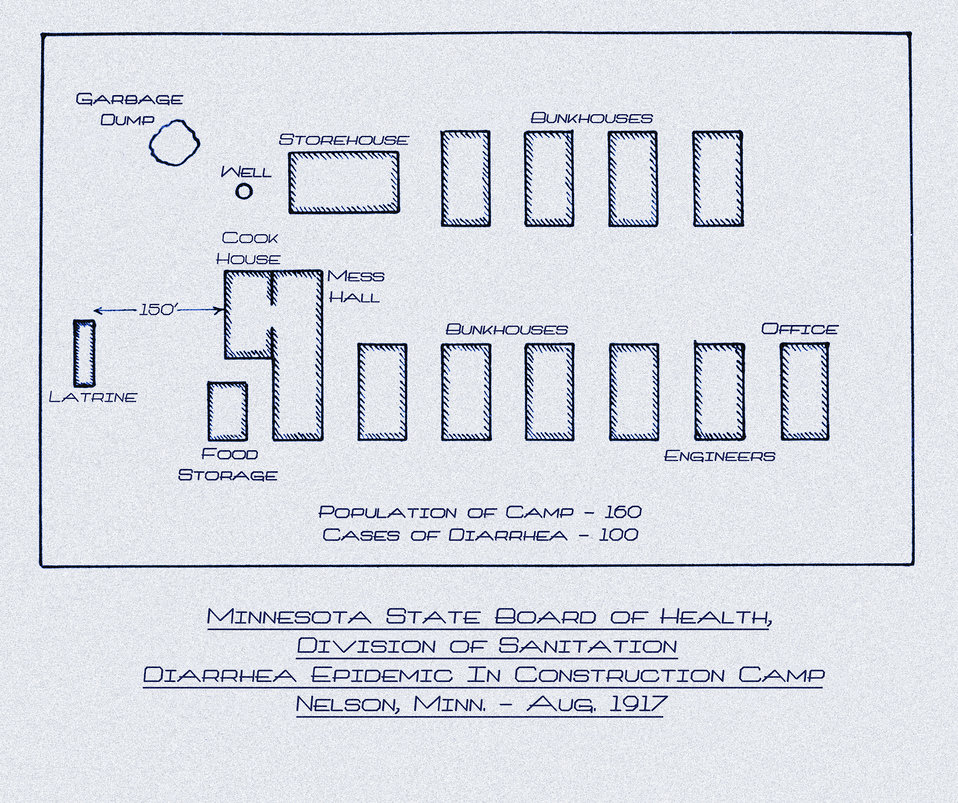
This historic 1921 diagram, which had been digitally enhanced and colorized, depicted the layout of a construction camp at Nelson, Minnesota, where an epidemic of dysentery occurred, due to the improper disposal of excreta and other camp wastes in August, 1917.